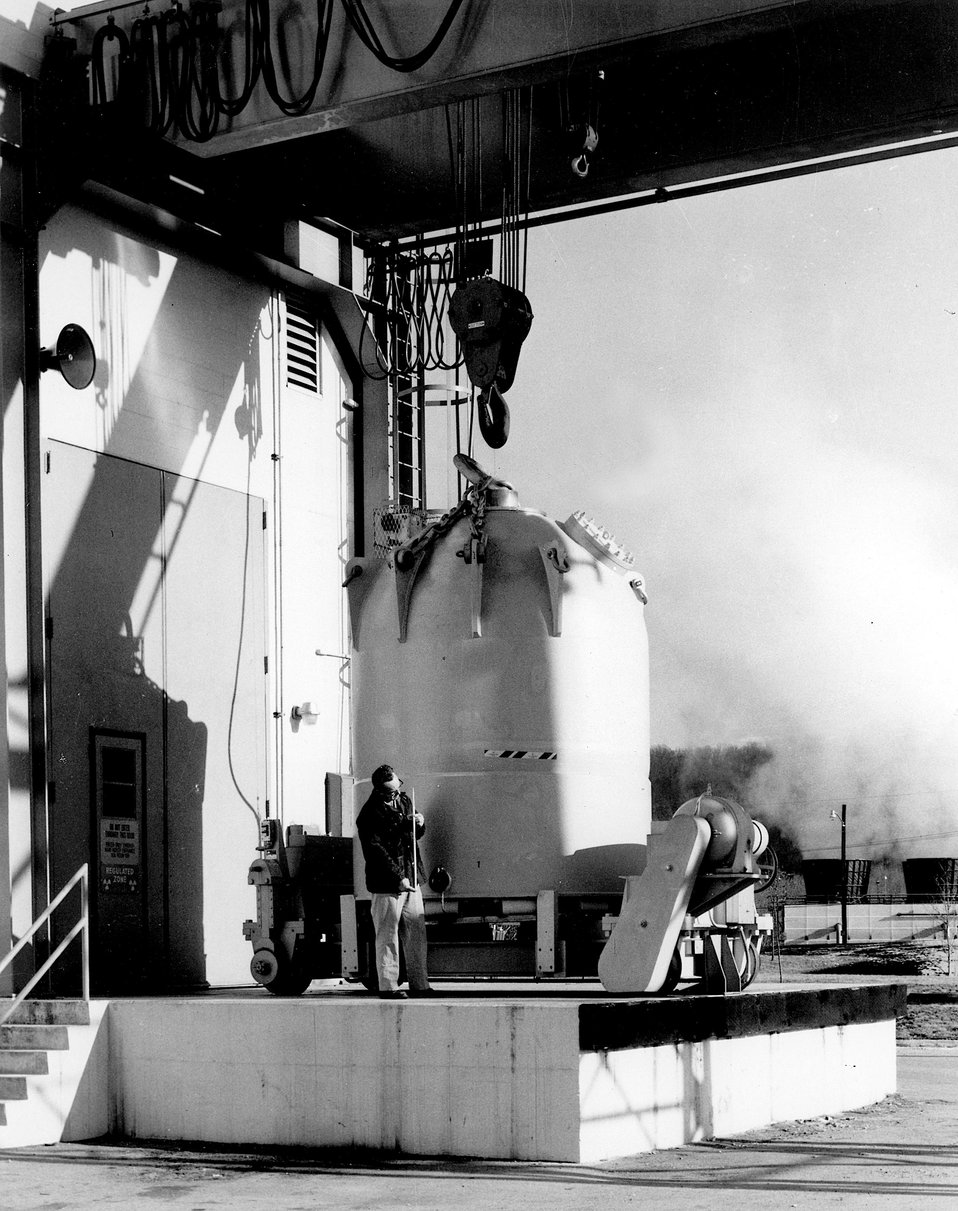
Irradiated Californium-252 targets are transported in this 50-ton carrier from the High Flux Isotope Reactor (HFIR). c. 1971